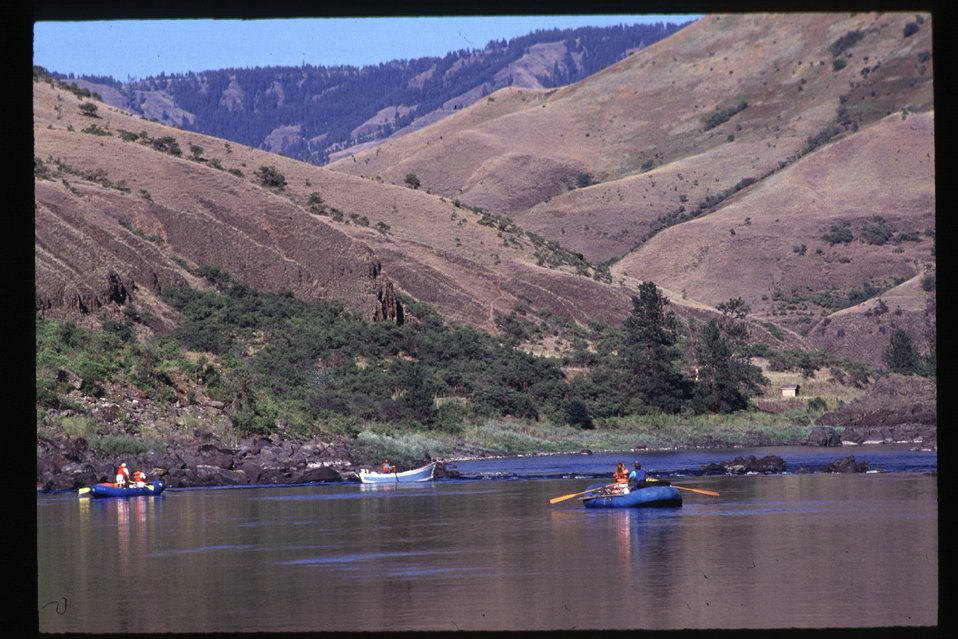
Rafts and dory Lower Salmon River Cottonwood Field Office UCSC Upper Columbia Salmon Clearwater District